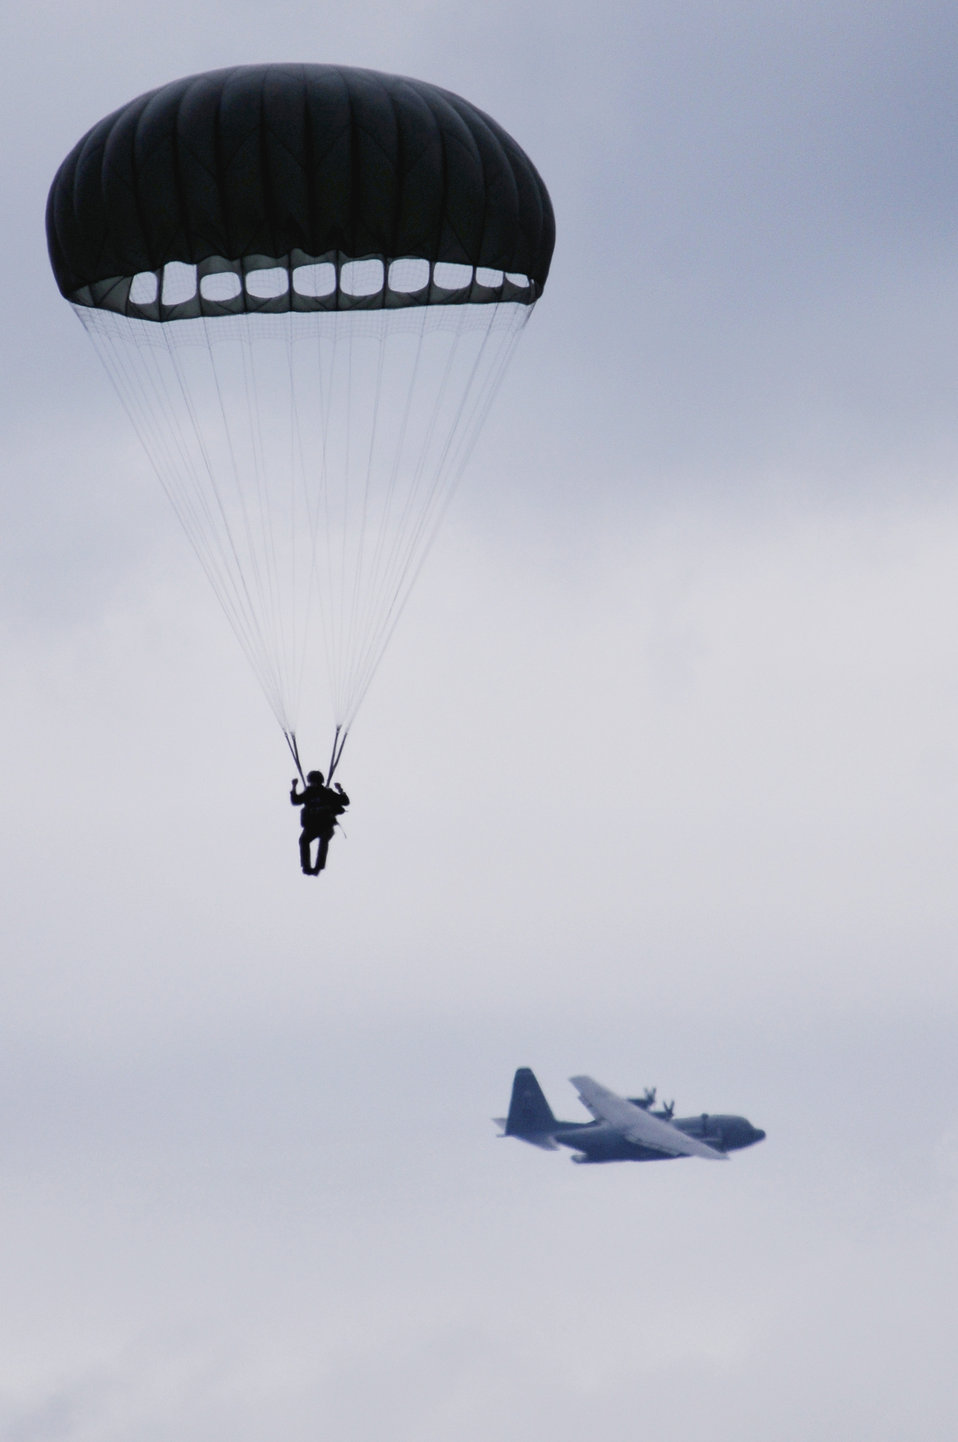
5 NATO countries take part in jump week

A U.S. soldier parachutes off a C-130 Hercules over the Bunker drop zone Aug. 13 in southwestern Germany. U.S. Soldiers and Airmen did a combined airborne drop with four other NATO countries.